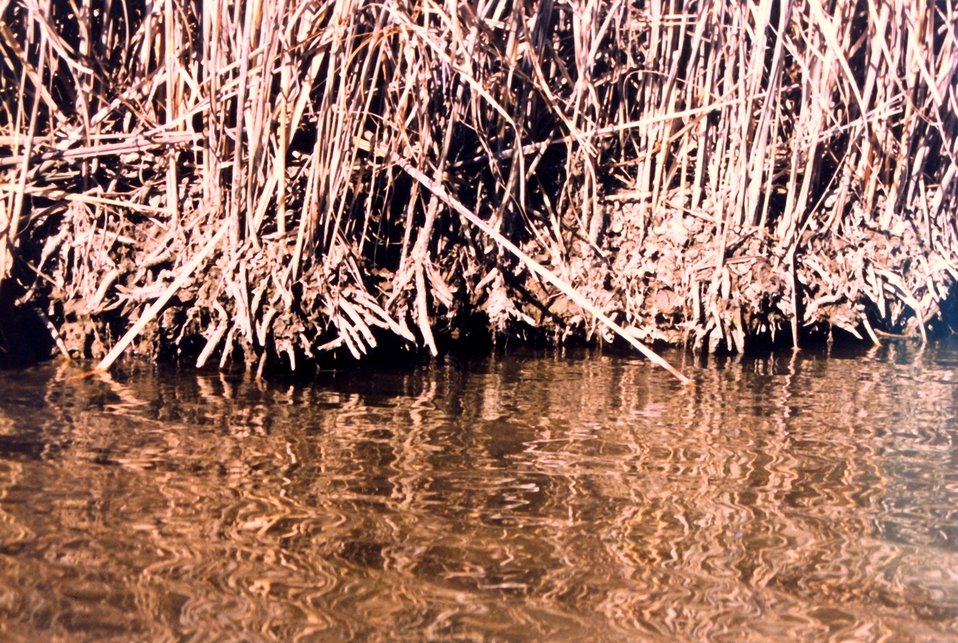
Winter marsh shoreline.